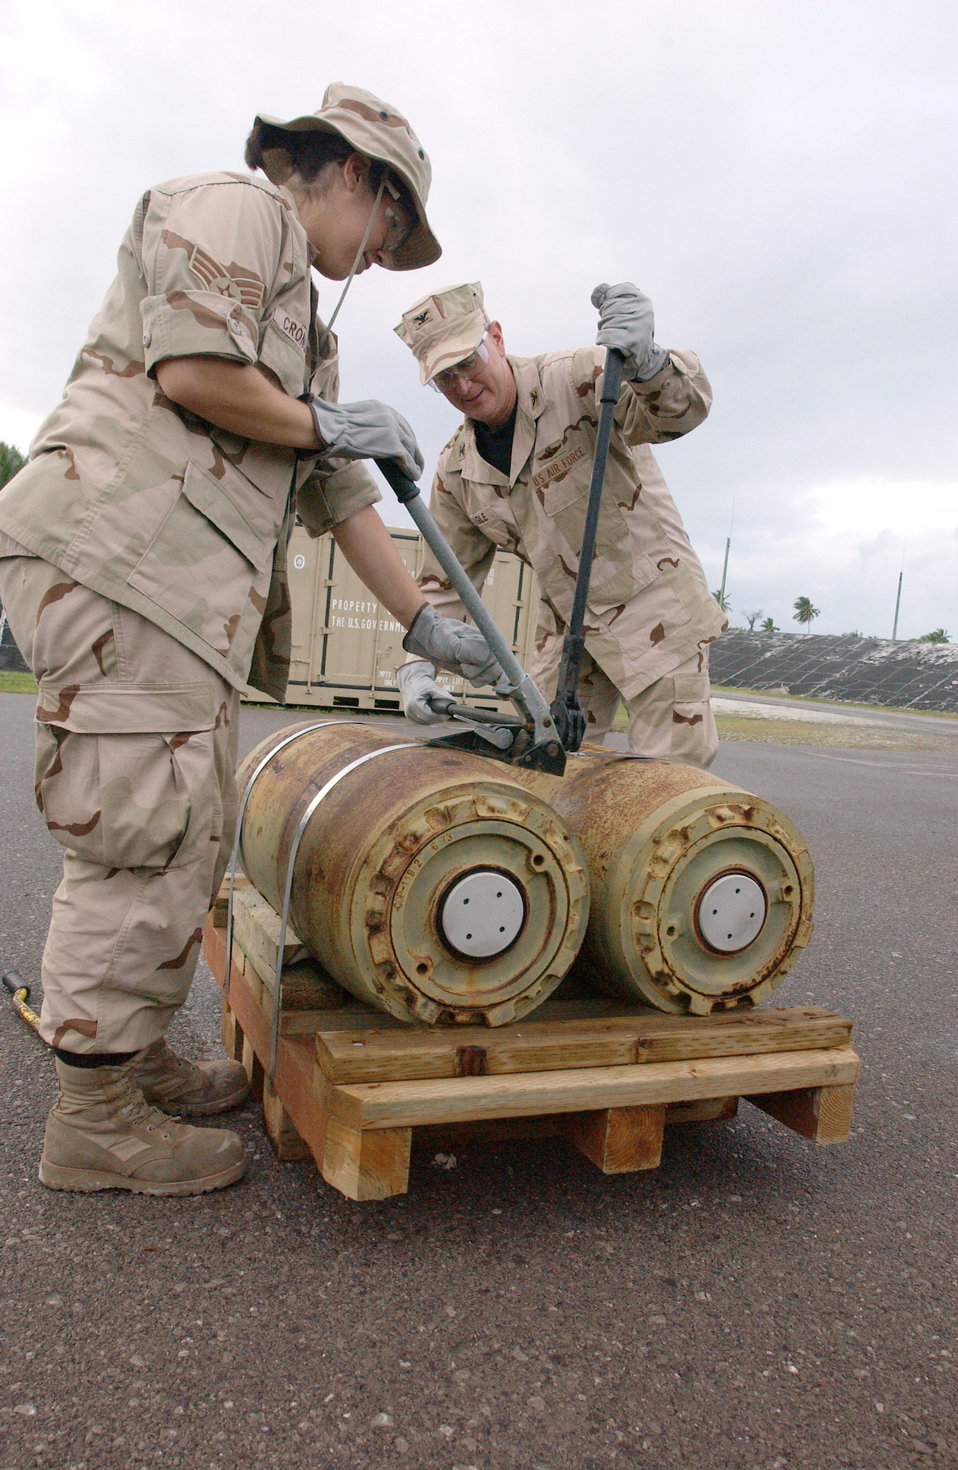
All strapped in

OPERATION ENDURING FREEDOM -- Senior Airman Erica Cronquist palletizes M-117 bombs June 10 with the assistance of Col. Eric Single at a forward-deployed location. Colonel Single is the 40th Air Expeditionary Group commander and is deployed from Minot Air Force Base, N.D. Airman Cronquist is a missile maintainer with the 40th Expeditionary Maintenance Squadron and is deployed from Fairchild AFB, Wash.